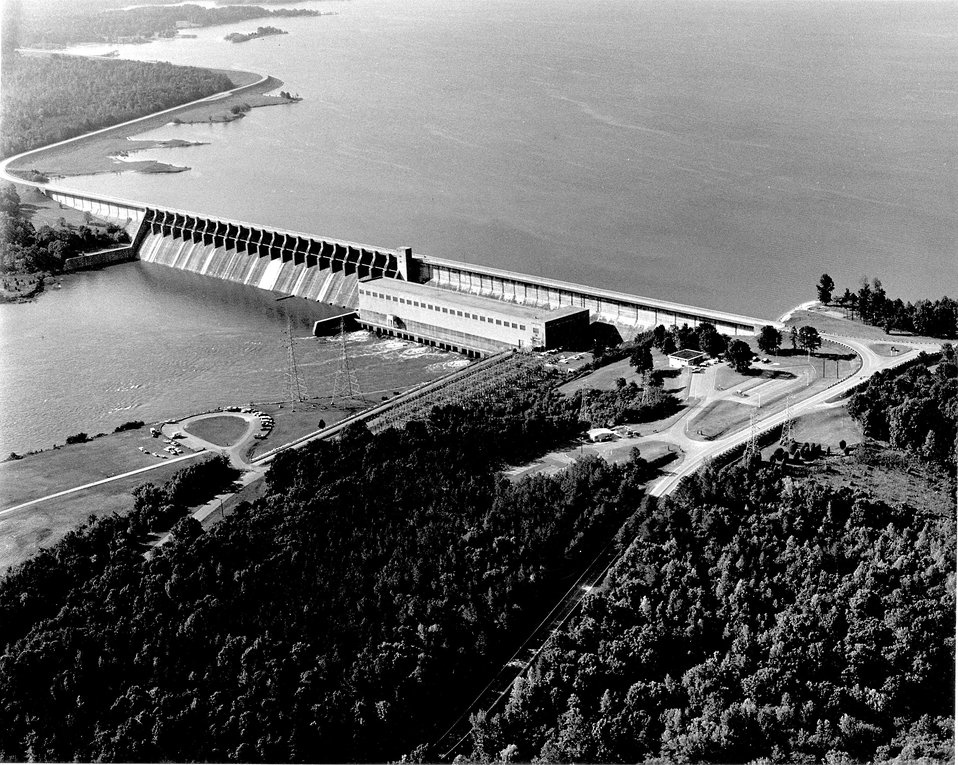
Kerr Dam & Reservoir, Virginia. c. undated